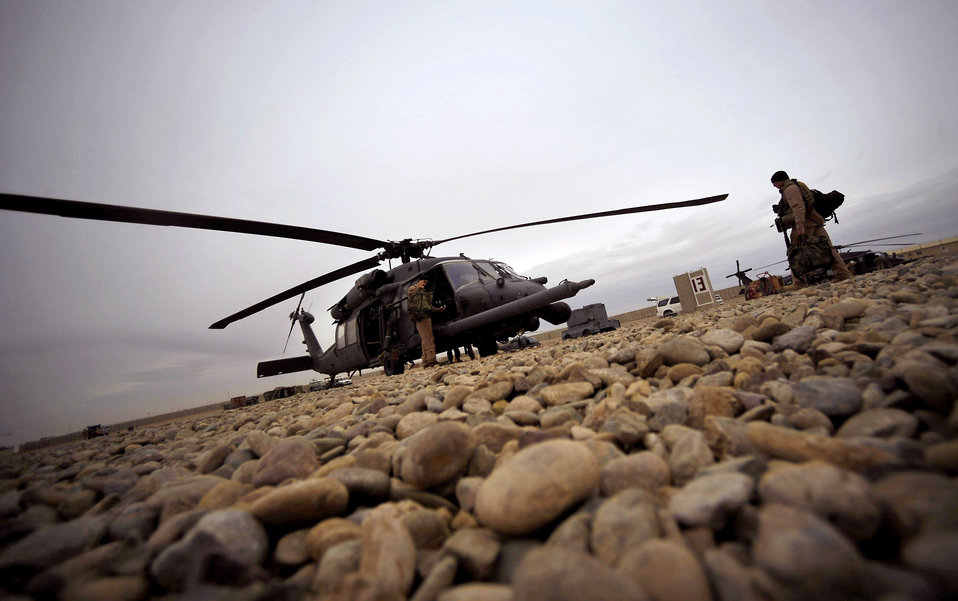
Squadron highlights capabilities during Afghan rescue mission

Airmen load their HH-60G Pave Hawk with gear Dec. 8, 2009 at Camp Bastion, Afghanistan. This ensures the team can respond in a moment's notice to rescue a patient and have everything needed to treat them. The Airmen are assigned to the 66th Expeditionary Rescue Squadron.